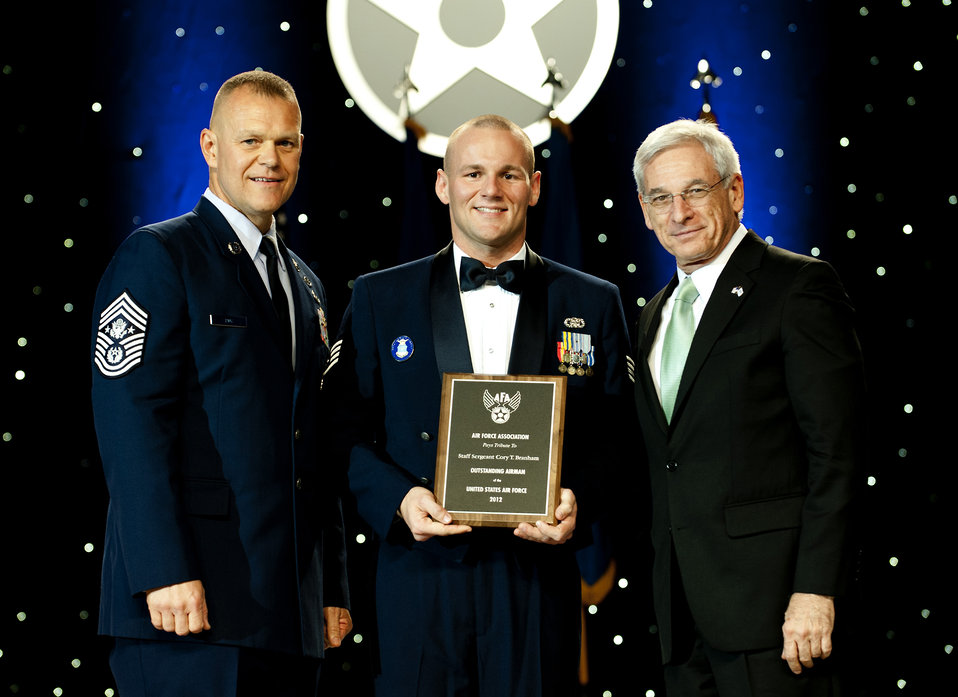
12 Outstanding Airmen of the Year

Chief Master Sgt. of the Air Force James Roy, left, and Sandy Schlitt, right, Air Force Association's chairman of the board, present a plaque to Staff Sgt. Cory Branham during the 12 Outstanding Airmen of the Year reception and awards dinner in Washington, D.C., Sept. 17, 2012. The recipients were recognized for superior leadership, job performance, community involvement and personal achievements. Branham is with the 366th Logistics Readiness Squadron from Mountain Home Air Force Base, Idaho.